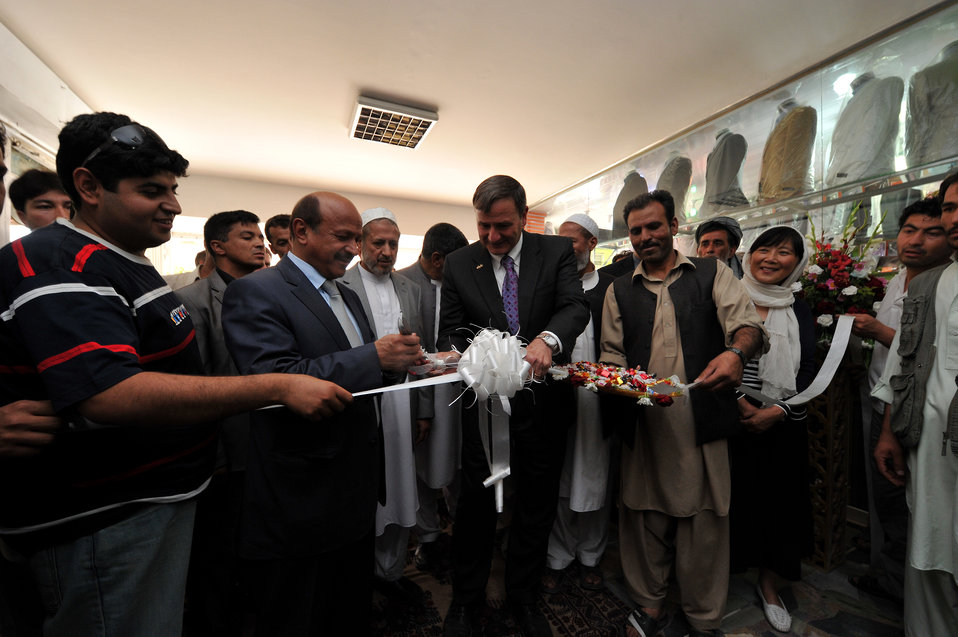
Ambassador Eikenberry and Kabul Mayor Nawandish Re-Open Foroshgah Shopping Center After January Attacks